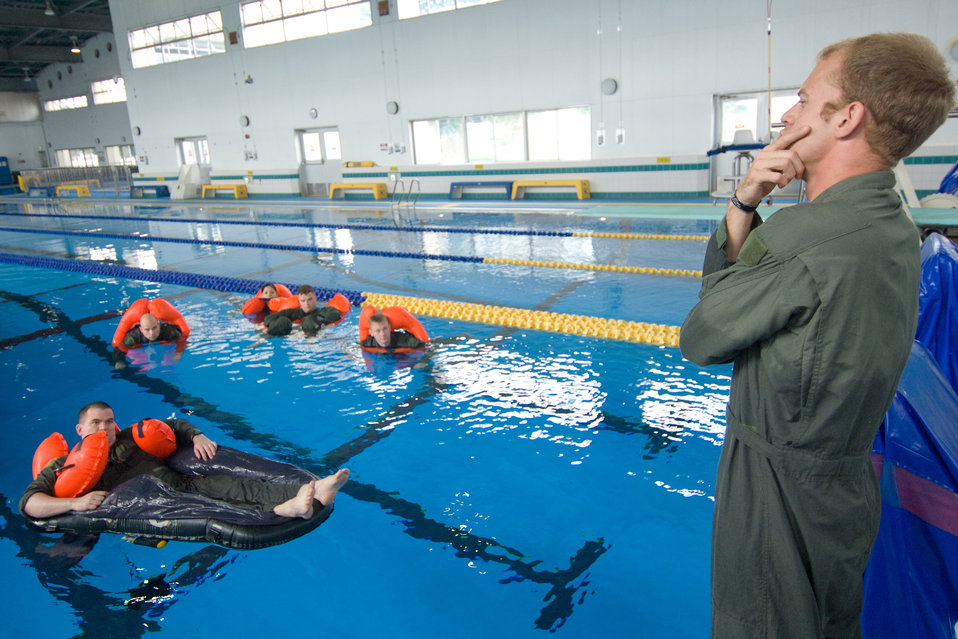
No easy day at the pool

Staff Sgt. Steven Raethel, 374th Operations Support Squadron Survival, Evasion, Resistance and Escape specialist, teaches water survival refresher training recently at the natatorium indoor pool at Yokota Air Base, Japan. The training is especially important for Yokota aircrews, who routinely fly long distances over large bodies of water in the Pacific Rim.